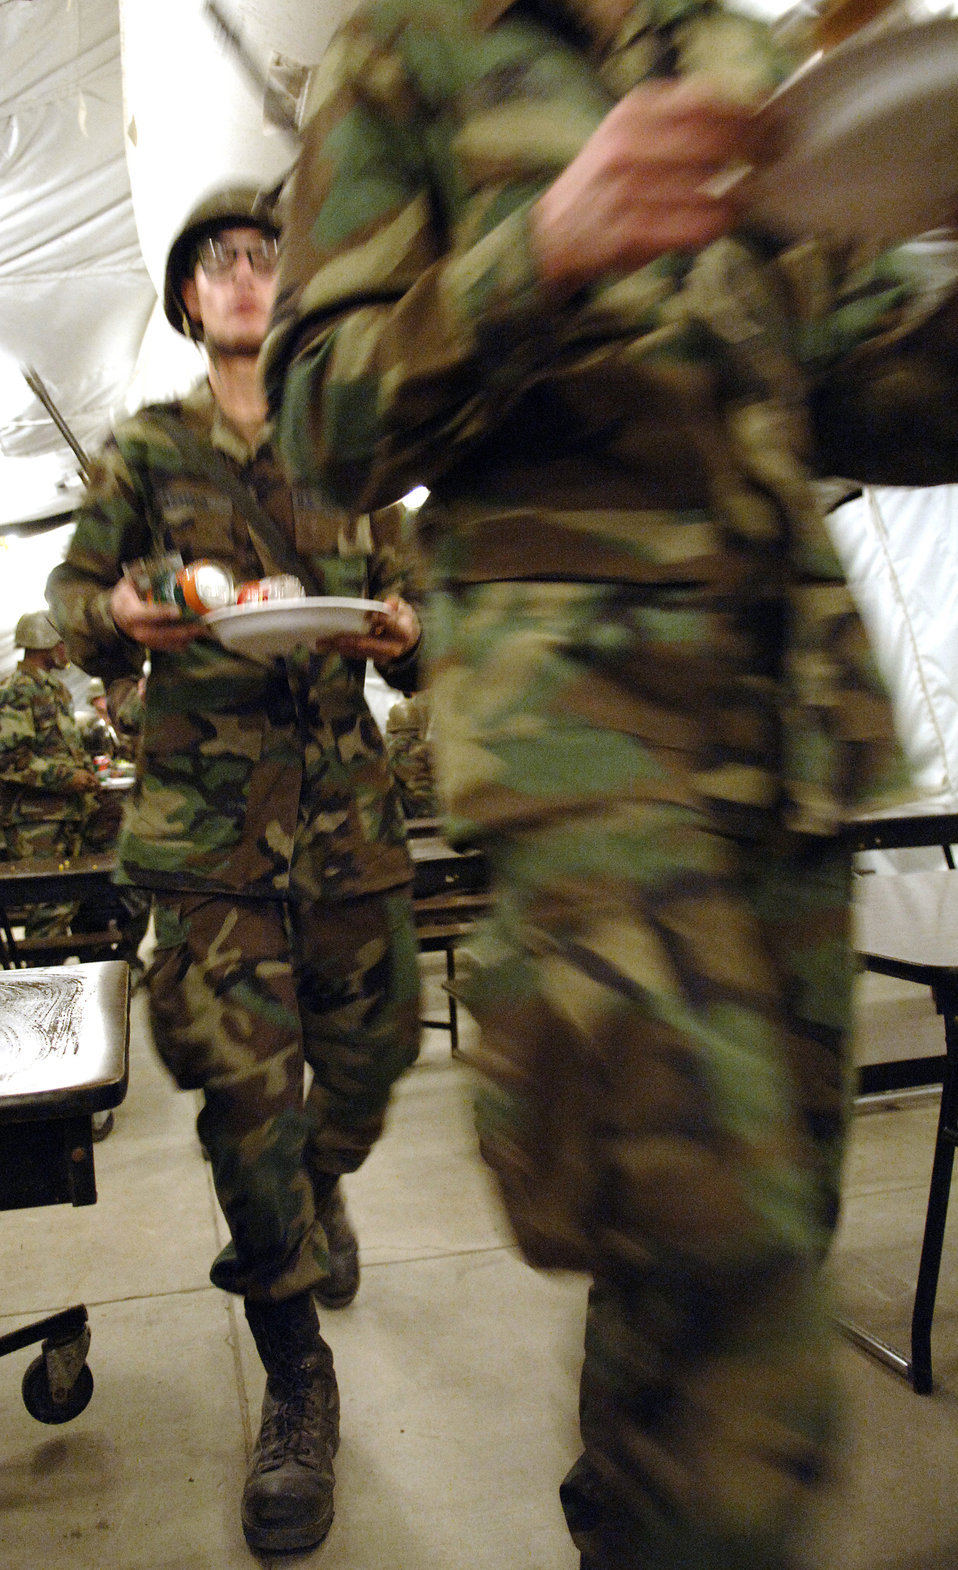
Feeding warriors

LACKLAND AIR FORCE BASE, Texas (AFPN) -- Trainees in the warrior week portion of basic military training march to a table to eat lunch. The meal was prepared by Airmen attending the services apprentice course here. The 31-day course consists of teaching all facets of the services technical trade.